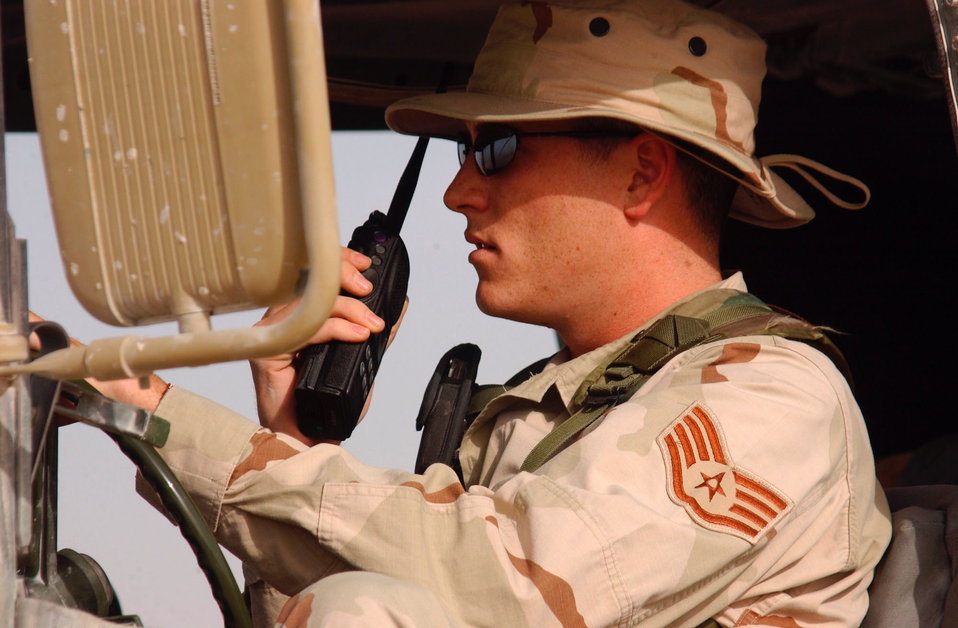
Parks

OPERATION IRAQI FREEDOM -- Staff Sgt. Matt Parks radios in from the field March 23 to test a new radio tower at a forward-deployed Operation Iraqi Freedom location. He is a member of the 379th Expeditionary Communications Squadron.